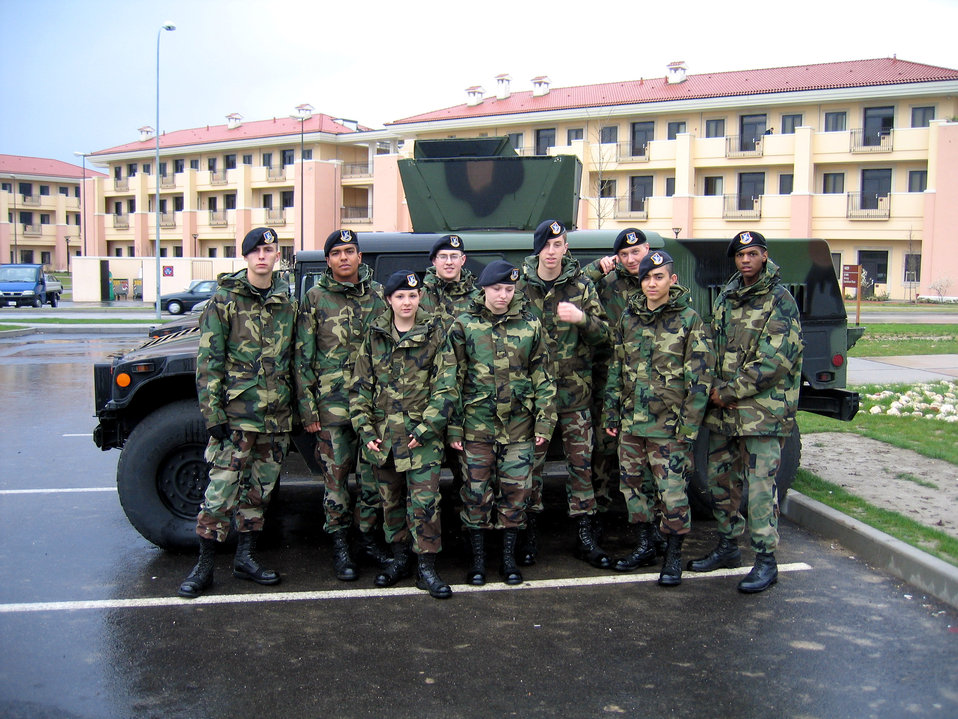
31st Fighter Wing security forces

Airmen from the 31st Security Forces Squadron at Aviano Air Base, Italy, group together outside the base's guardmount building.